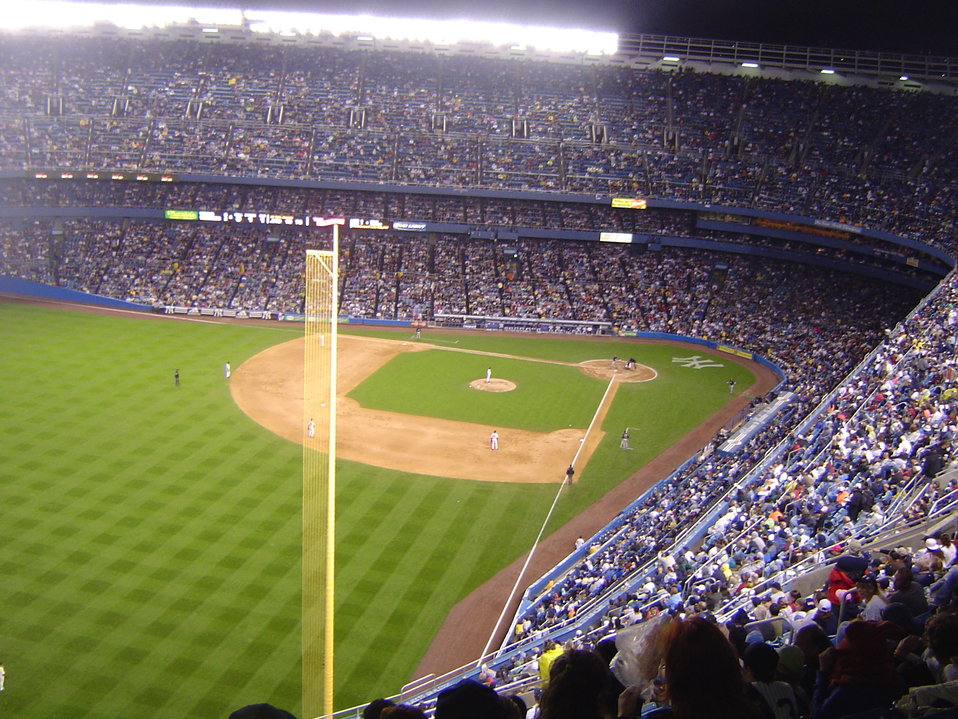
View of a night game at Yankee Stadium from the third tier
05:58, 14 November 2006 . . Anubis2051 . . 2048×1536 (1,498,900 bytes)